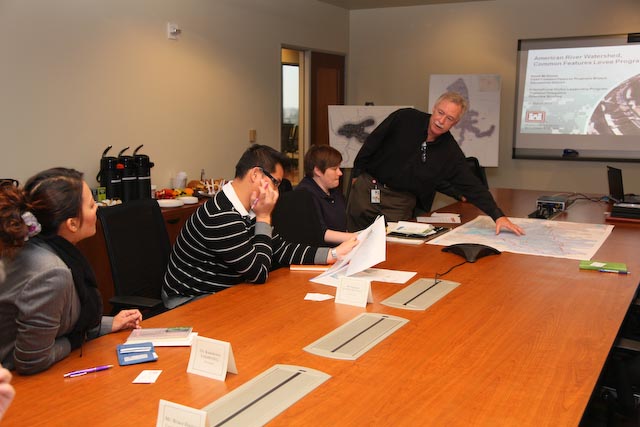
Corps discusses watershed approach with Thai Delegation

U.S. Army Corps of Engineers Sacramento District project manager Dennis Clark (right) refers to a map of the Sacramento-San Joaquin Delta to help explain how the delta interacts with surrounding rivers and water-delivery systems to two delegates visiting from Thailand. The district hosted the delegates in Sacramento, Calif., March 30, 2012. The Corps, and its state and local partners, are working to reduce the risk of failure to nearly 1,600 miles of levees lining dozens of islands in the delta to reduce flooding and maintain the necessary ecosystem.